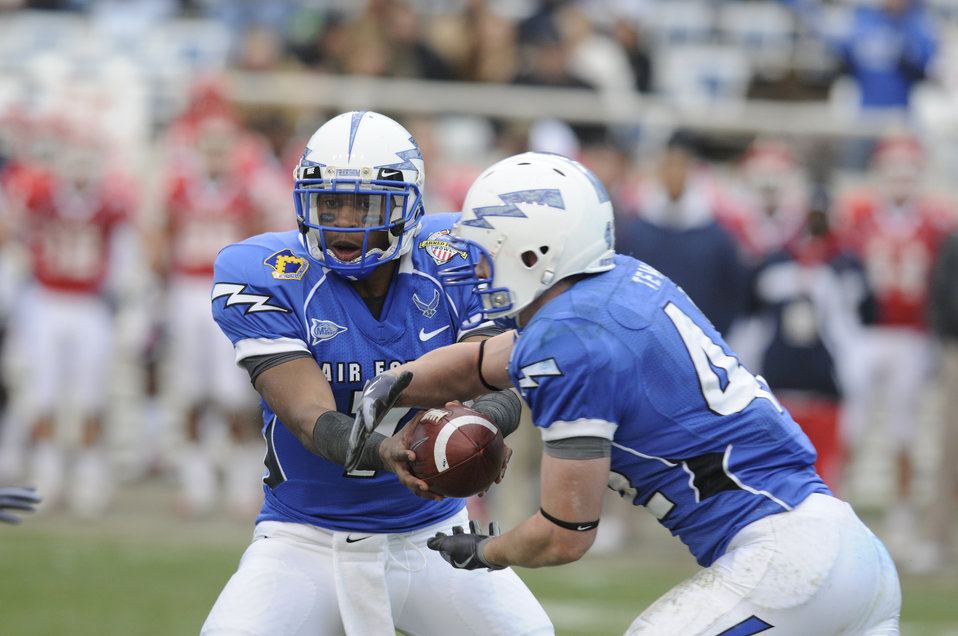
Armed Forces Bowl

Falcons quarterback Tim Jefferson hands off to fullback Jared Tew during the Armed Forces Bowl Dec. 31, 2009, at Fort Worth, Texas. The U.S. Air Force Academy triumphed over the University of Houston Cougars, 47-20.